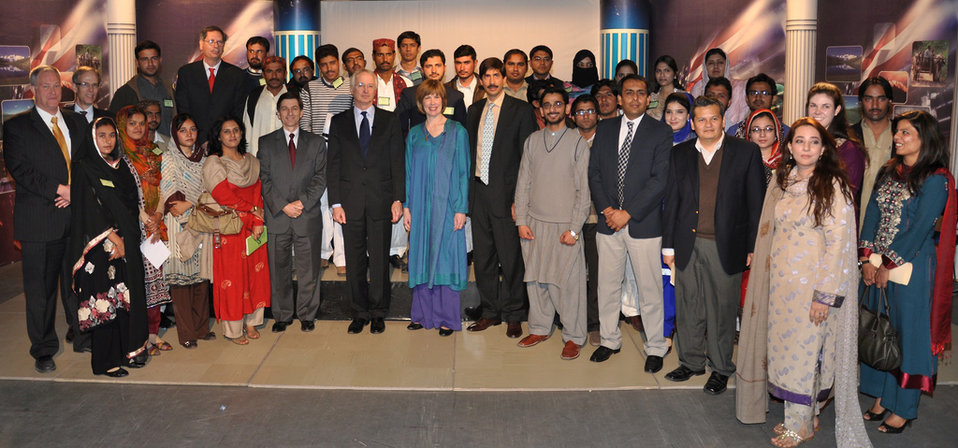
USAID's Merit-and Needs-based Scholarship Program

Islamabad, January 25, 2011 - U.S. Ambassador Cameron Munter and his wife, Dr. Marilyn Wyatt pose with a group of 29 students from all around the country who are recipients of USAID’s Merit-and Needs-based Scholarship Program, managed by the Higher Education Commission.